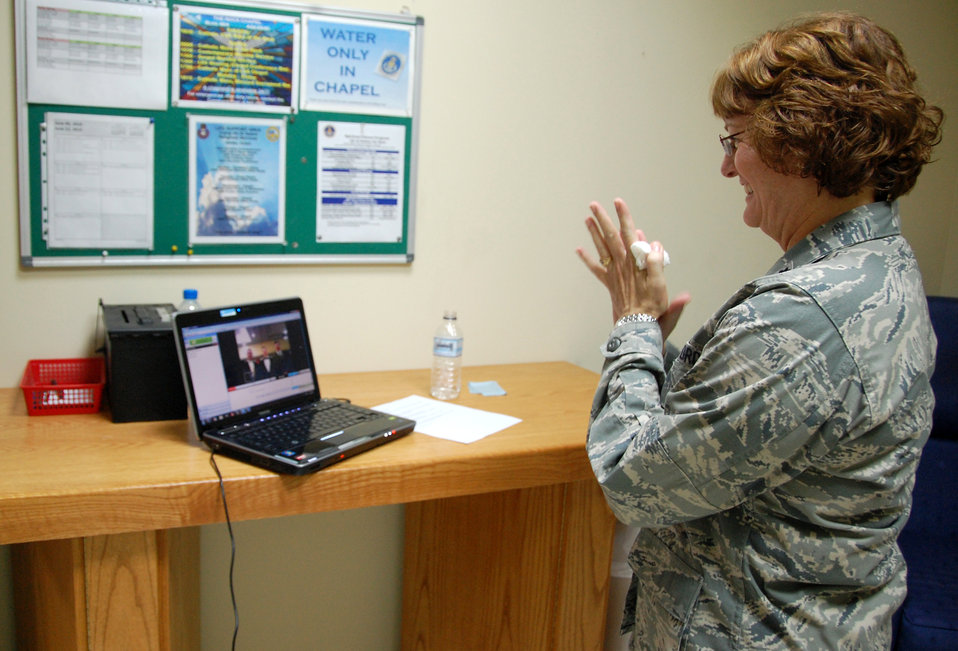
Mother commissions son

Lt. Col. Maureen Carroll celebrates the commissioning of her son, 2nd Lt. Alek Krallman, into the Air Force June 13, 2010, during his Air Force ROTC graduation from Central Washington University in Ellensburg, Wash. Colonel Carroll swore her son into the Air Force using a software application that allows users to video conference through the Internet. Colonel Carroll is the 386th Expeditionary Maintenance Squadron commander.